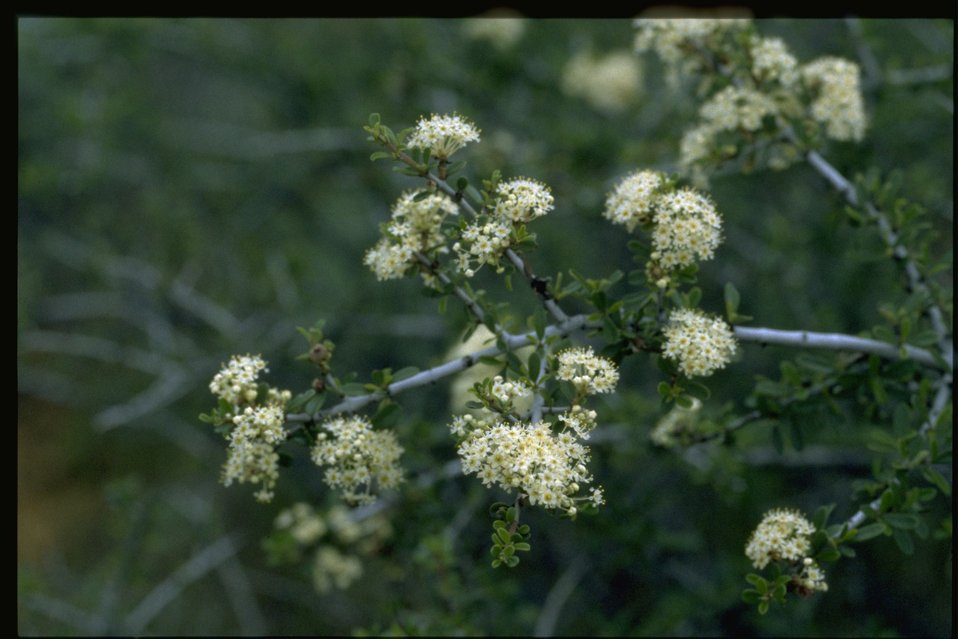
Medium shot of Ceanothus capitatum.